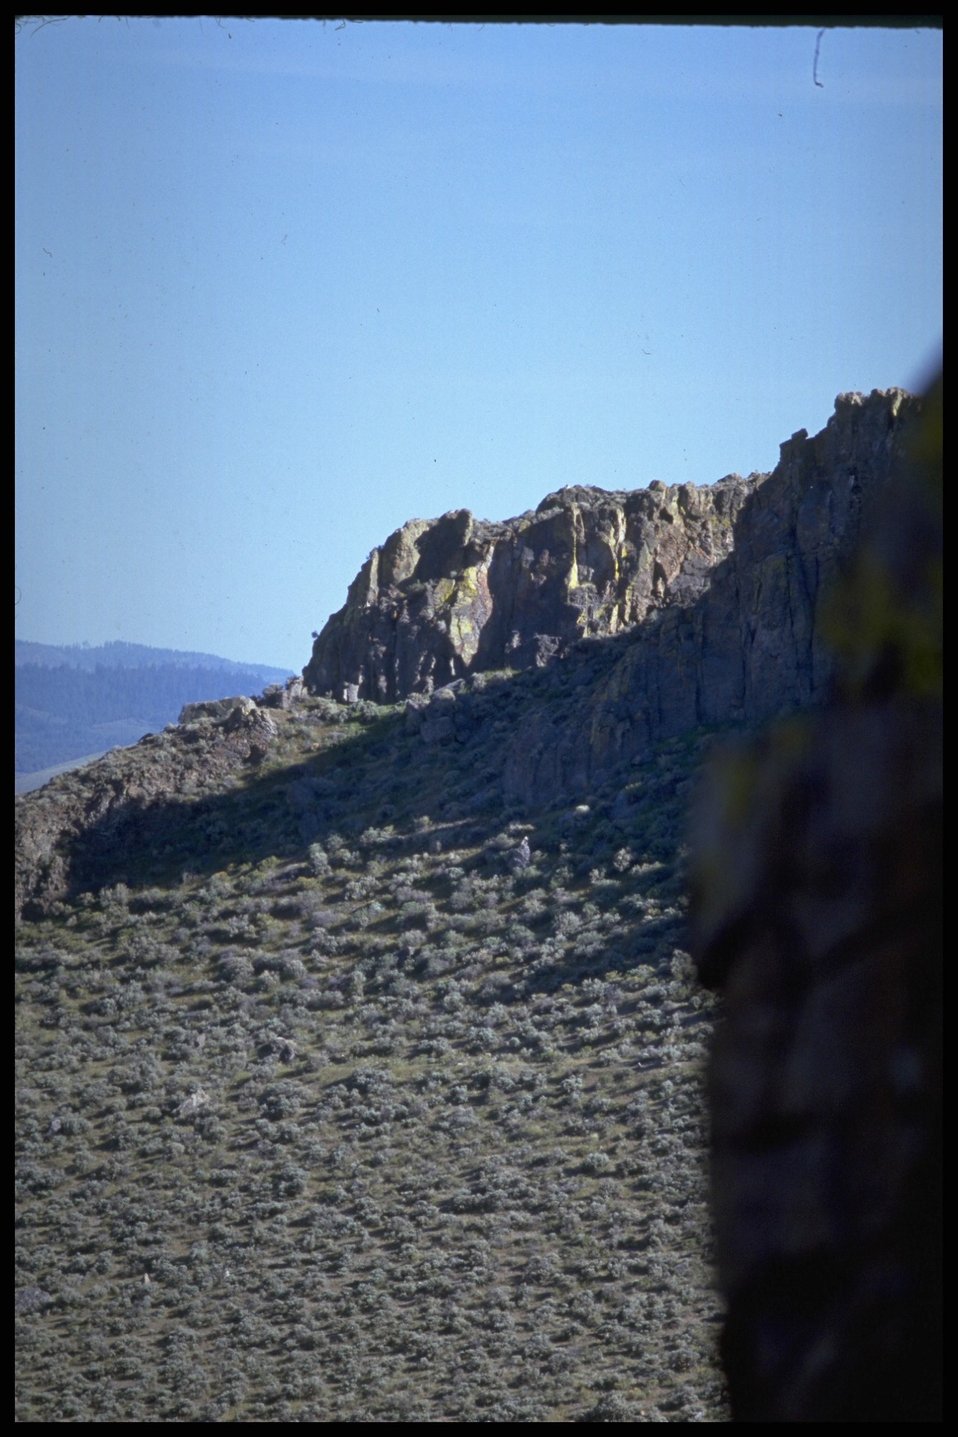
Lakeview District desert.